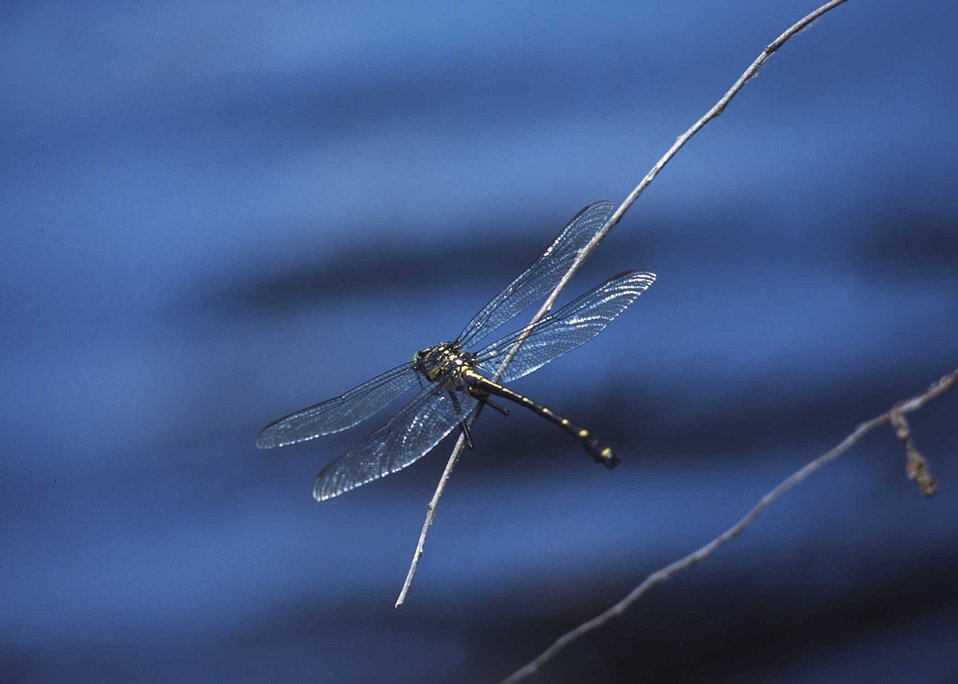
Adult Dragonfly perched above the Norwalk River.